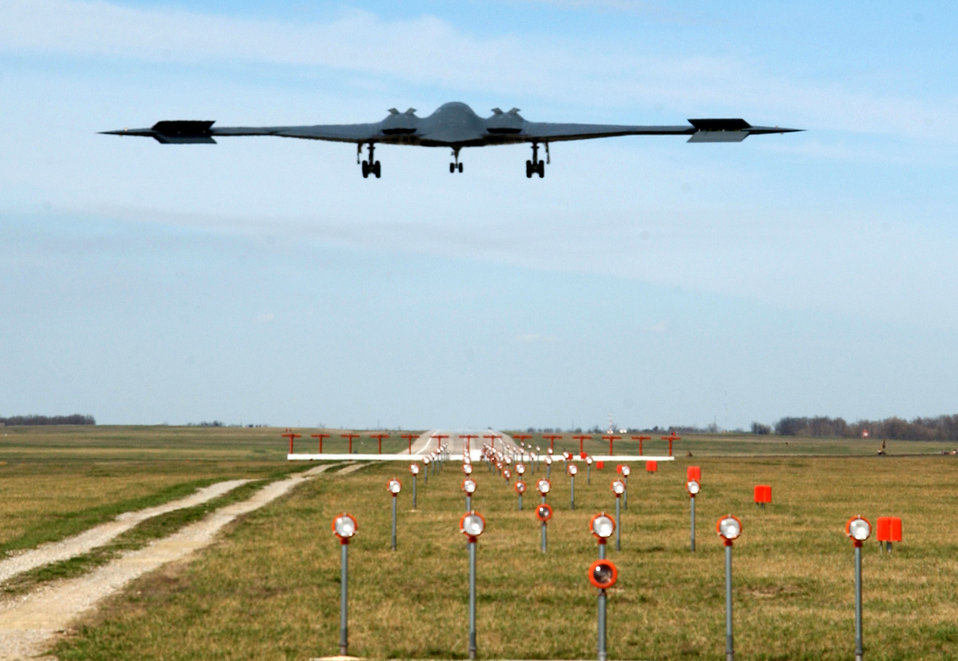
Spirit of Missouri

The B-2 named